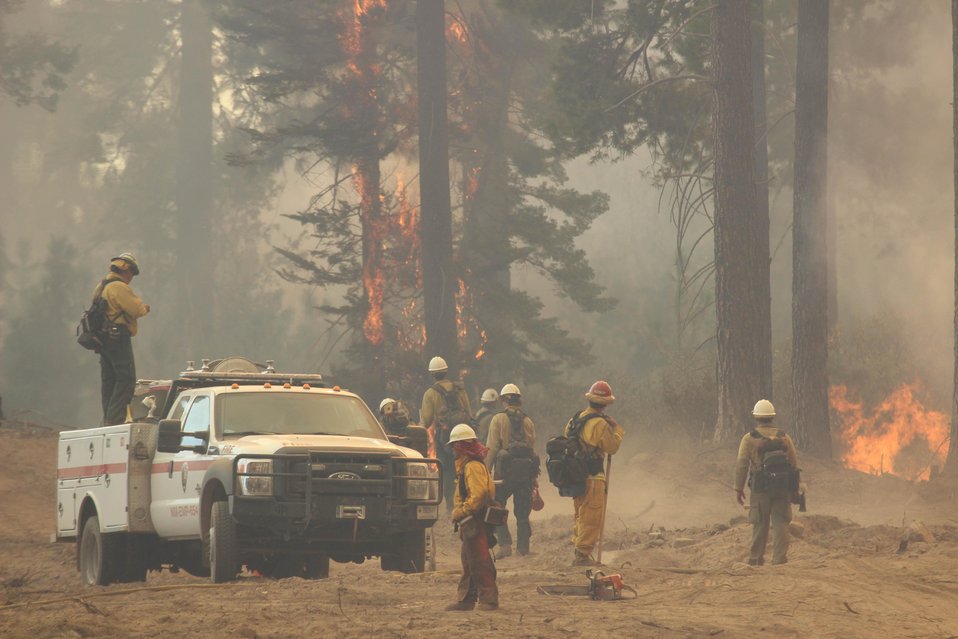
Fire crews hold the line on the southern flank of the Rim Fire. The Rim Fire in the Stanislaus National Forest near in California began on Aug. 17, 2013 and is under investigation. The fire has consumed approximately 235,841 acres and is 70% contained.